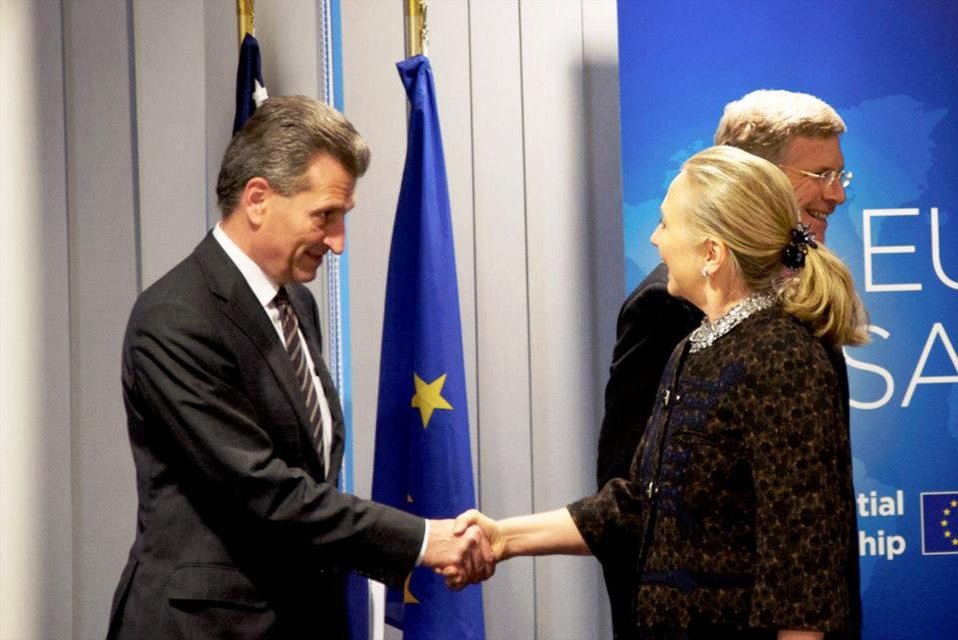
Secretary Clinton Shakes Hands With EU Energy Commissioner Oettinger

U.S. Secretary of State Hillary Rodham Clinton shakes hands with EU Energy Commissioner Günther Oettinger after the U.S.-EU Energy Council meeting in Brussels, Belgium, December 5, 2012.